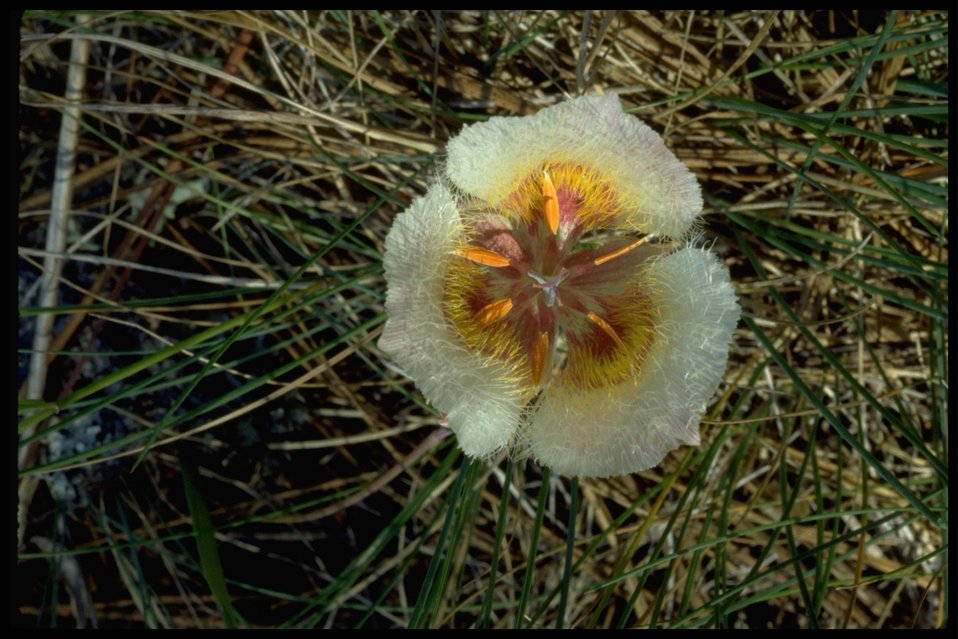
Calochortus coxii, commonly known as Crinite Mariposa Lily.